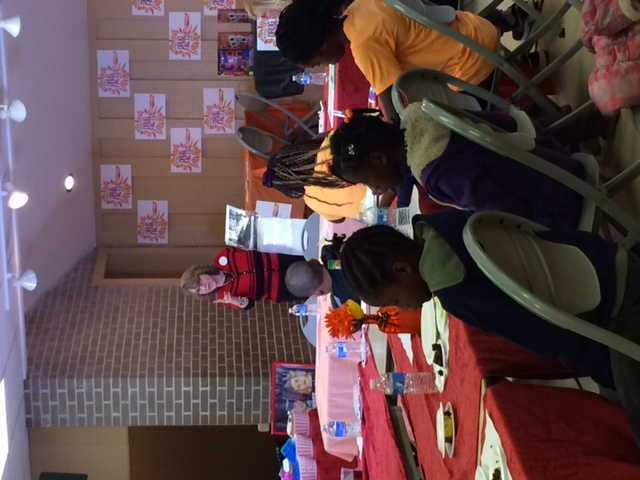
Shattering the Myths in Florida

Folks from Orlando, Florida are 'Shattering the Myths' during the 2014 National Drug Facts Week at Orlo Vista Park.